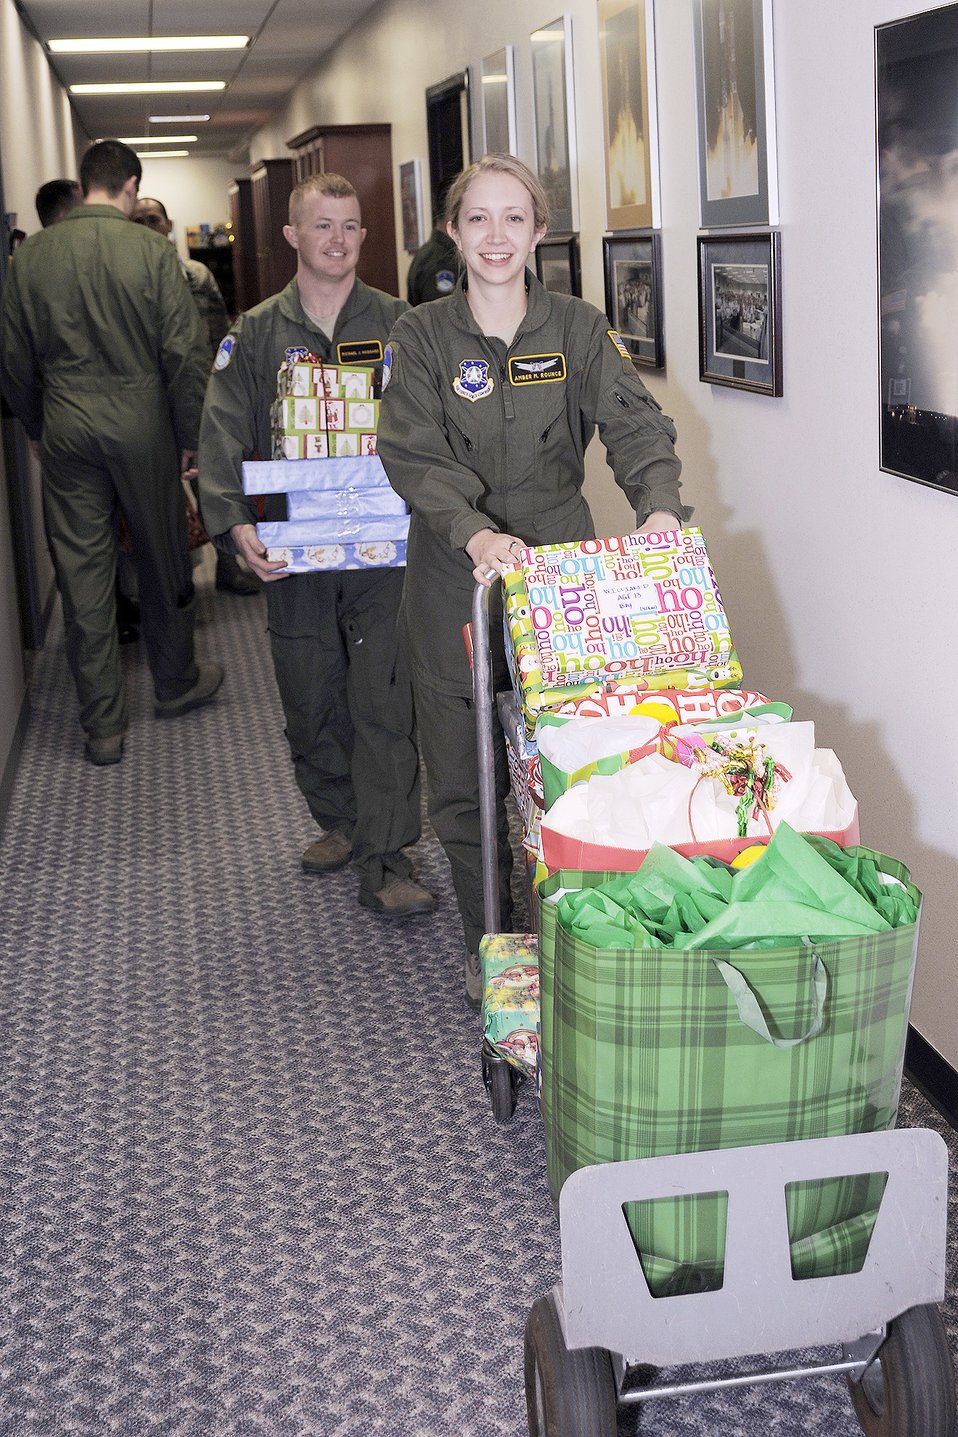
Christmas for Kids

Airmen from the 2nd Space Operations Squadron gather toys for the